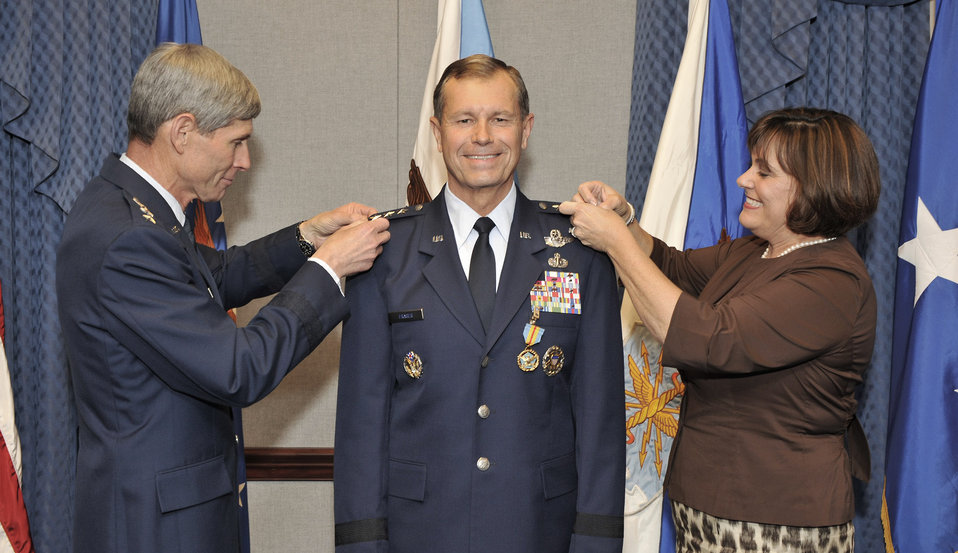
Air Force's newest general

Air Force Chief of Staff Gen. Norton Schwartz and Mrs. Bev Fraser pin the fourth star on Vice Chief of Staff Lt. Gen. William Fraser during a promotion ceremony Oct. 8 in the Pentagon. Along with his selection as vice chief came the promotion to full general.